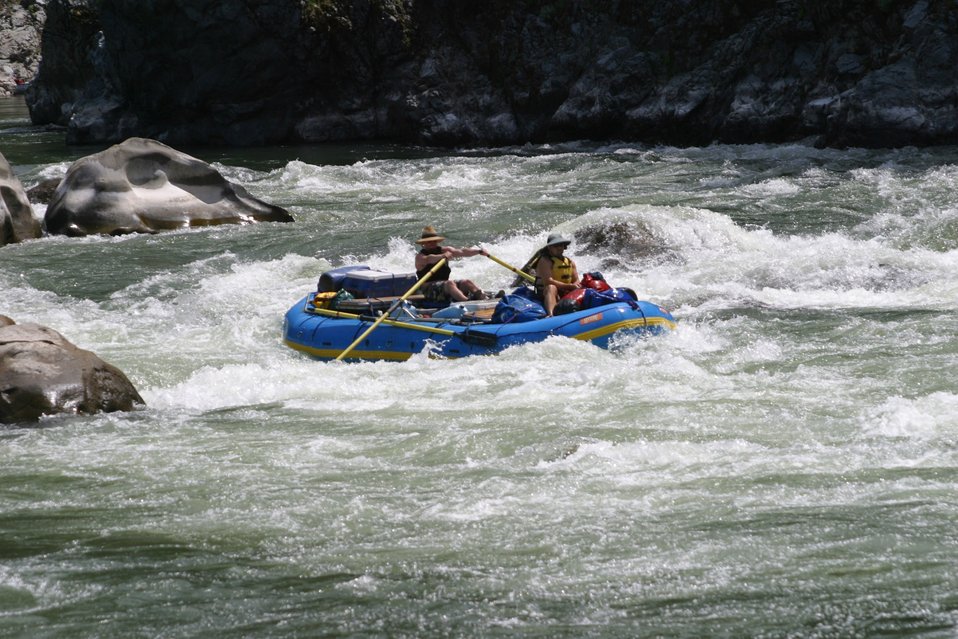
Wild section of the Rogue River from Grave Creek to Foster Bar May 19 to May 22.